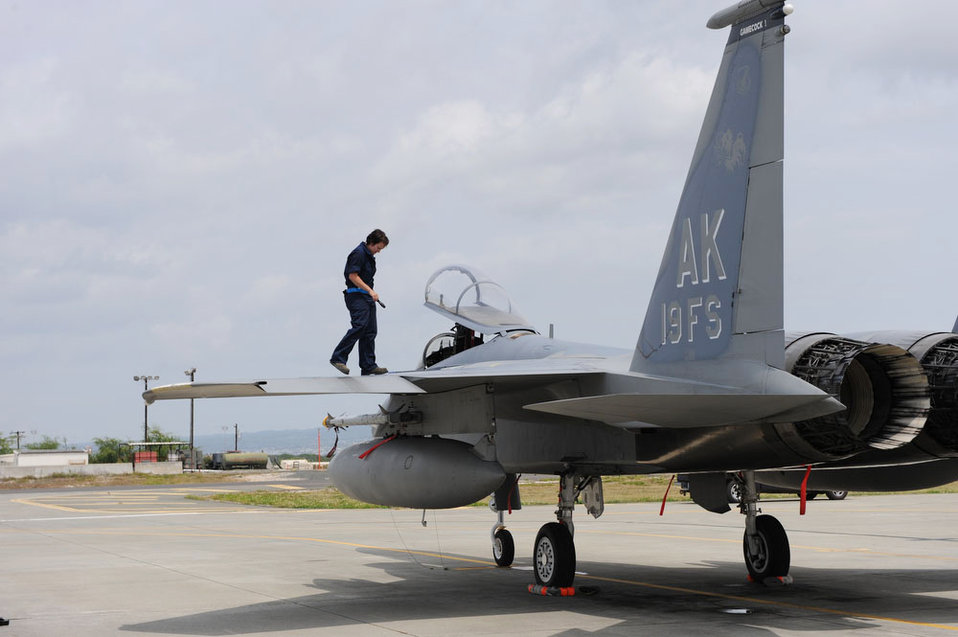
Airmen complete month-long training in 2 continents

Staff Sgt. Sarah Flagg inspects the wing of an F-15 Eagle after the aircraft?s recent return from a mission scenario during a joint exercise with the Hawaii Air National Guard's 199th Fighter Squadron March 22, 2010, at Joint Base Pearl Harbor-Hickam, Hawaii. Sergeant Flagg is an F-15 crew chief, of the Aircraft Maintenance Unit, 3rd Maintenance Squadron at Elmendorf AFB, Alaska